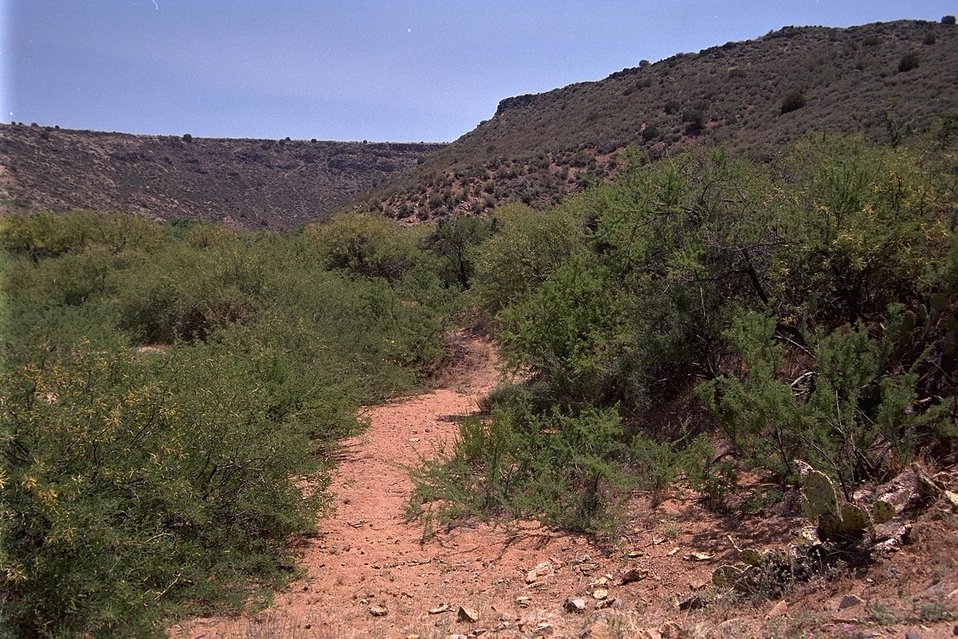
A small trail runs through some thick foliage in the Agua Fria National Monument.